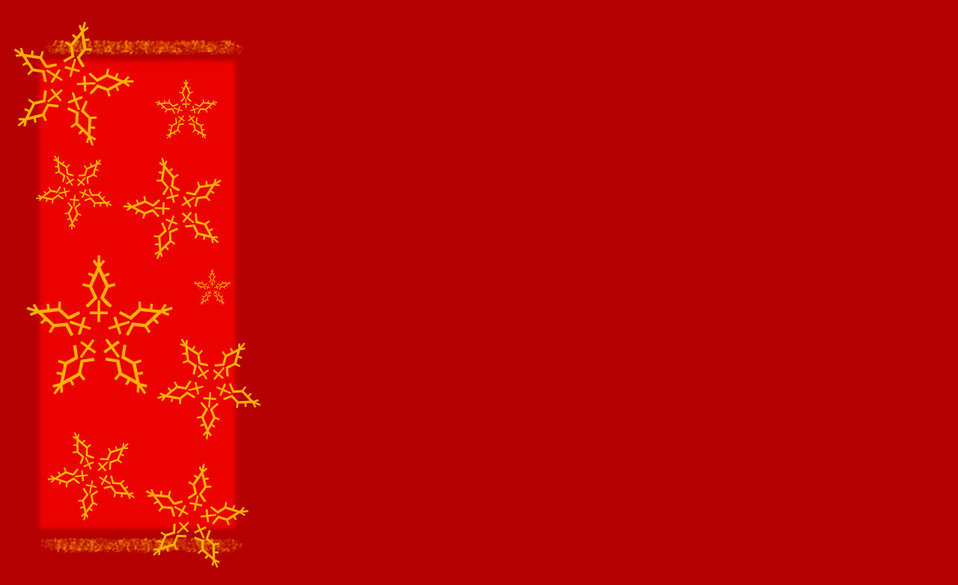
Christmas time

Warm christmas background with snowflakes.